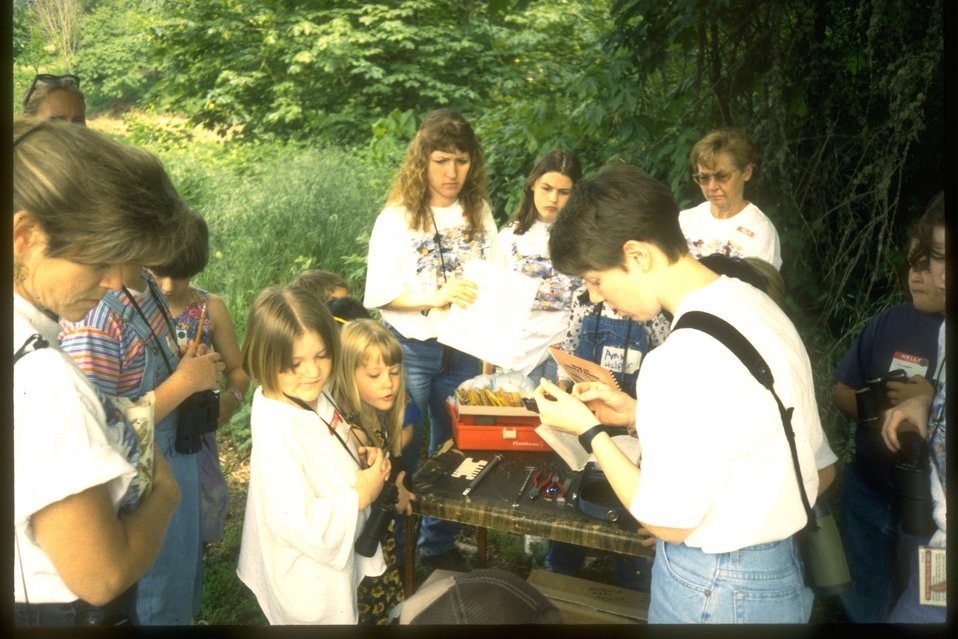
International Migratory Bird Day being celebrated with a picnic.